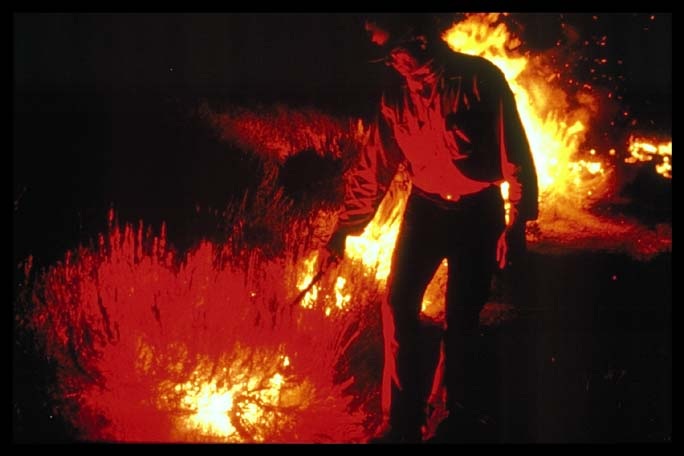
Backfire